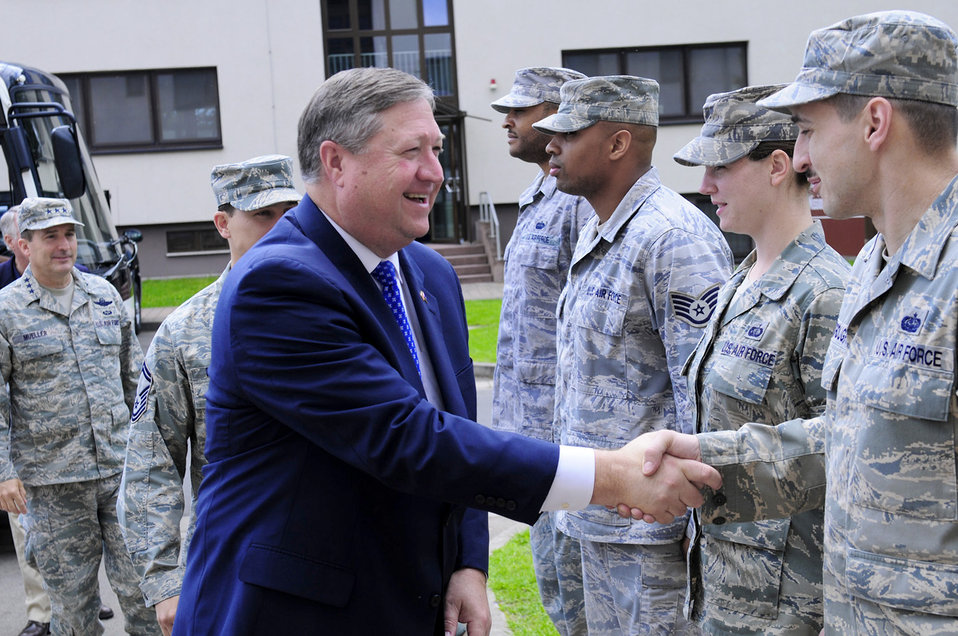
SecAF at Ramstein

Secretary of the Air Force Michael Donley greets staff members at the Deployment Transition Center at Ramstein Air Base, Germany, June 18, 2011.The secretary traveled to Europe to meet with Airmen and receive updates from command leaders on U.S. Air Forces in Europe efforts to build partnership capacity and ongoing contingency support for Operation Unified Protector.